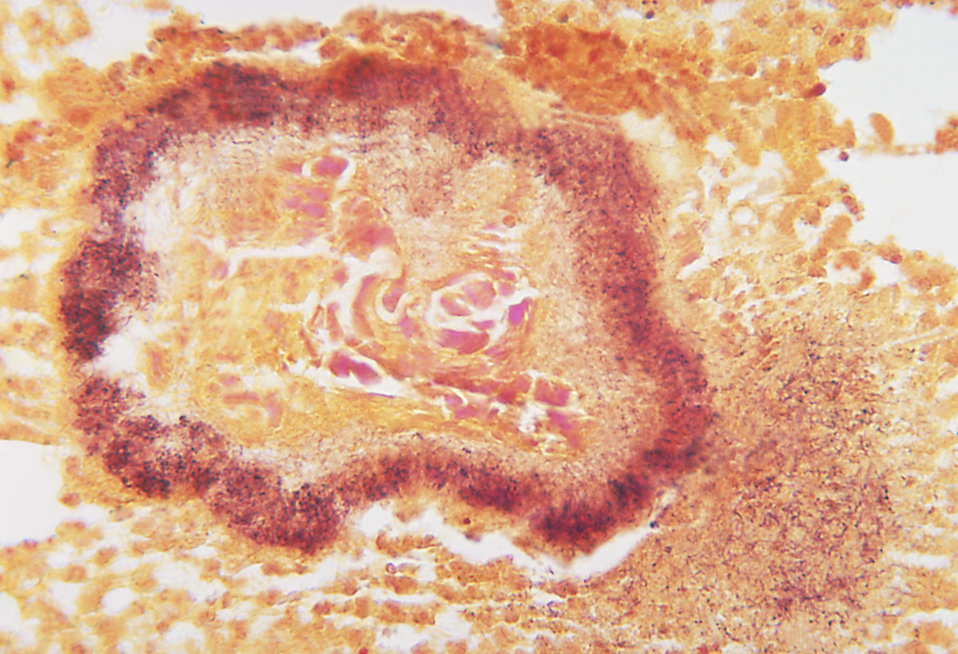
This is the histopathologic appearance of an actinomycetic mycetomatous granule using a Brown and Brenn stain.